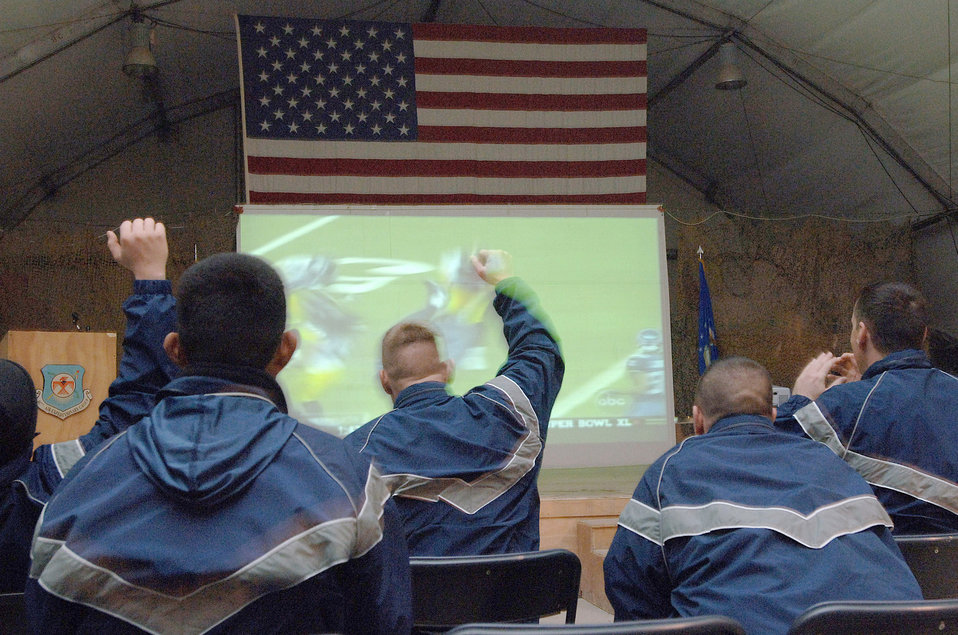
Super Bowl in Southwest Asia

ALI BASE, Iraq (AFPN) -- Airmen deployed in support of Operation Iraqi Freedom watch Super Bowl XL, which aired at about 1:30 a.m. Monday here. The Airmen are with the 407th Air Expeditionary Group.